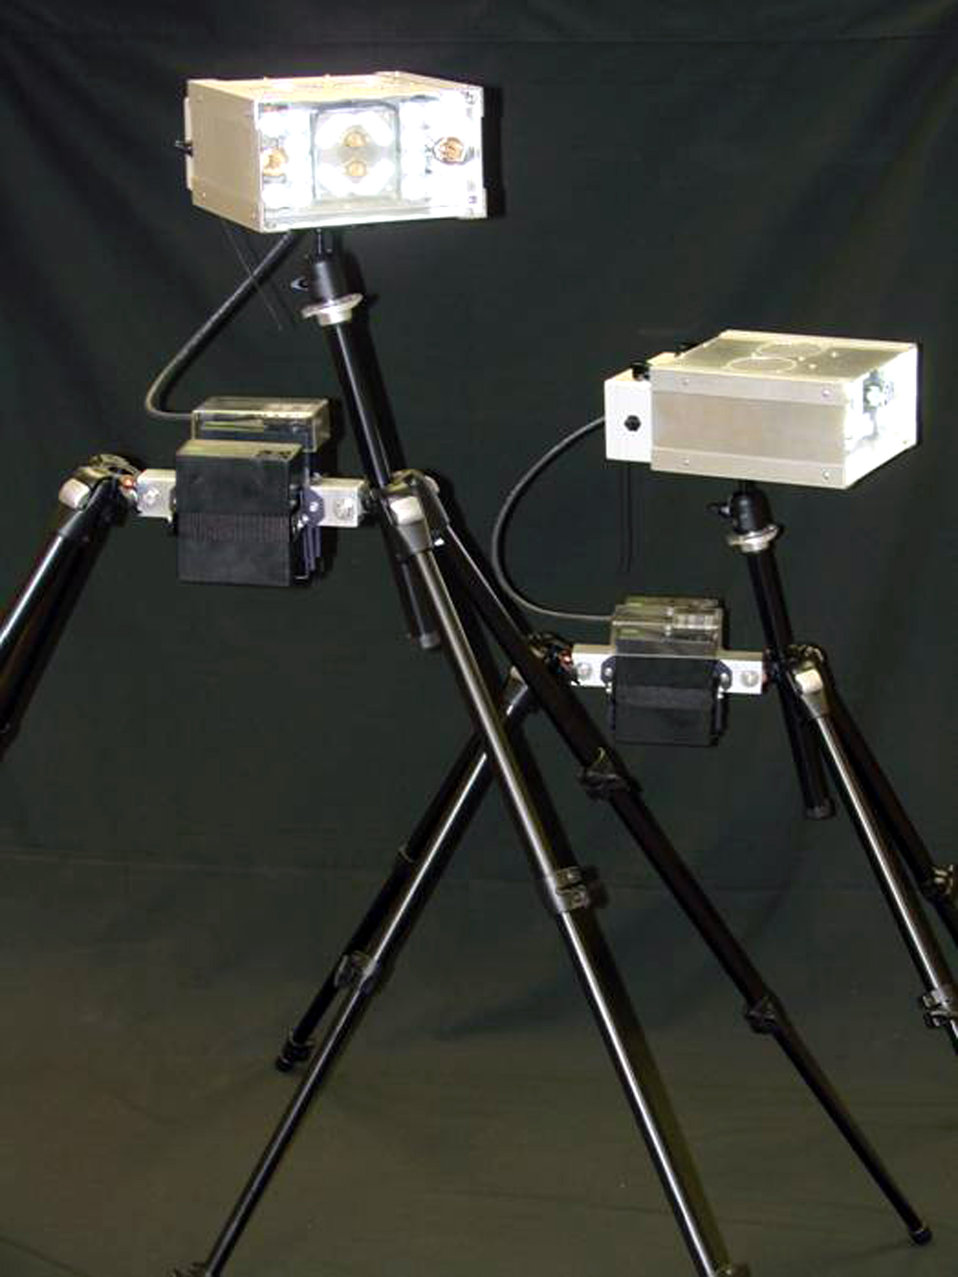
Air Mobility Battlelab casts a BrightEye

The BrightEye Portable Solid-State LED Lighting System is a light-weight, easy-to-use system designed for multiple military uses. BrightEye was developed through an initiative with the Air Force Expeditionary Center's Air Mobility Battlelab at Fort Dix, N.J., and Cyberlux Corporation.